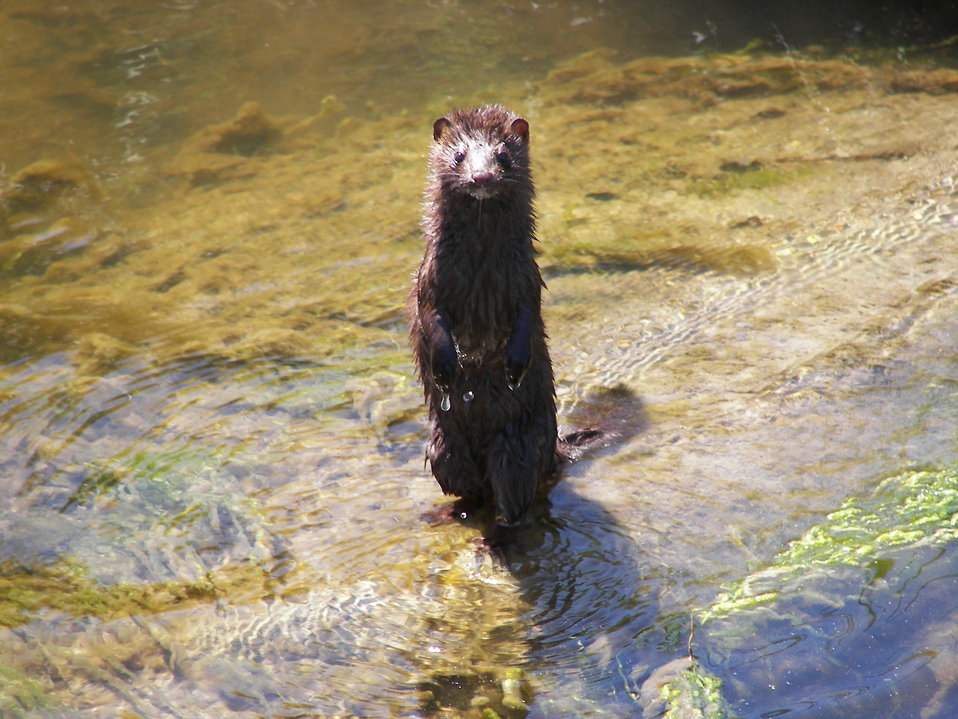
Weasel at Rachel Carson National Wildlife Refuge

Credit: Carlos Guindon/USFWS Contractor

www.fws.gov/refuge/rachel carson/